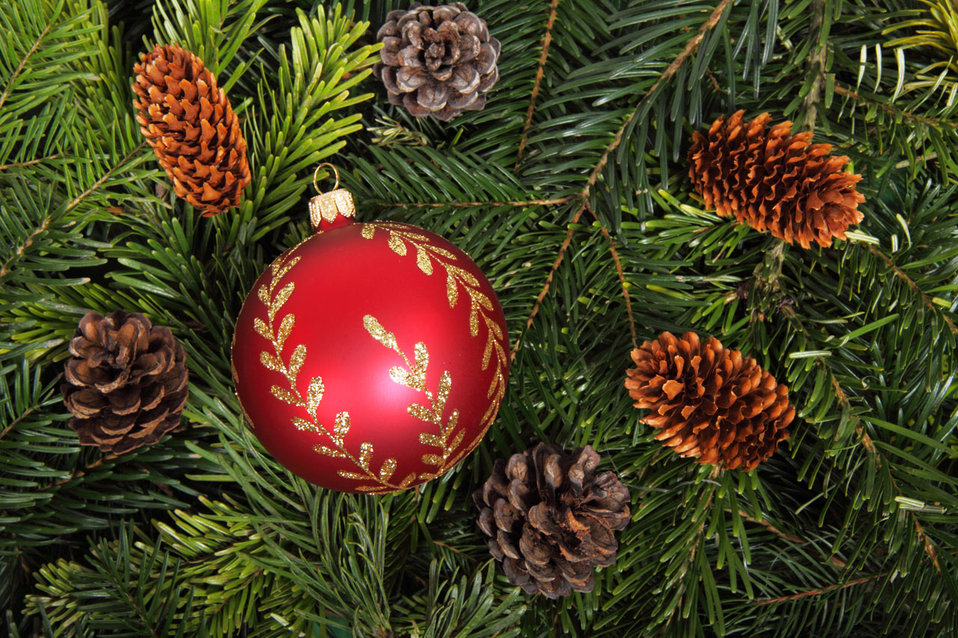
Bauble on christmas tree background

Red bauble on various tree branches with cones.